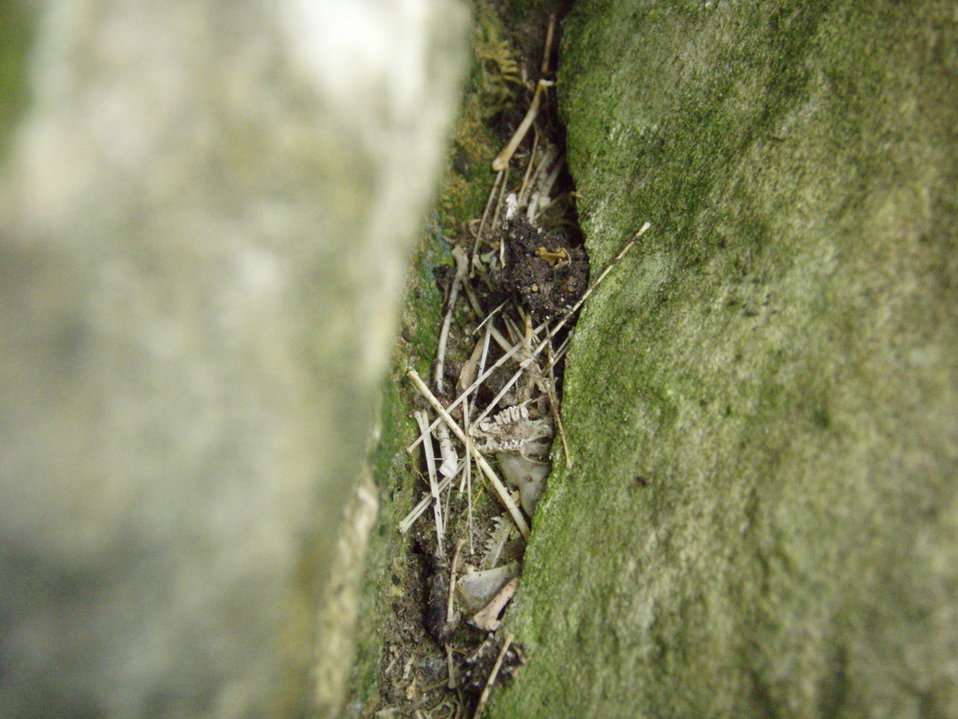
Bat bones pack crevices outside Aeolus Cave

Bat bones pack crevices in limestone bluffs outside of Aeolus Cave, a WNS site in Vermont.